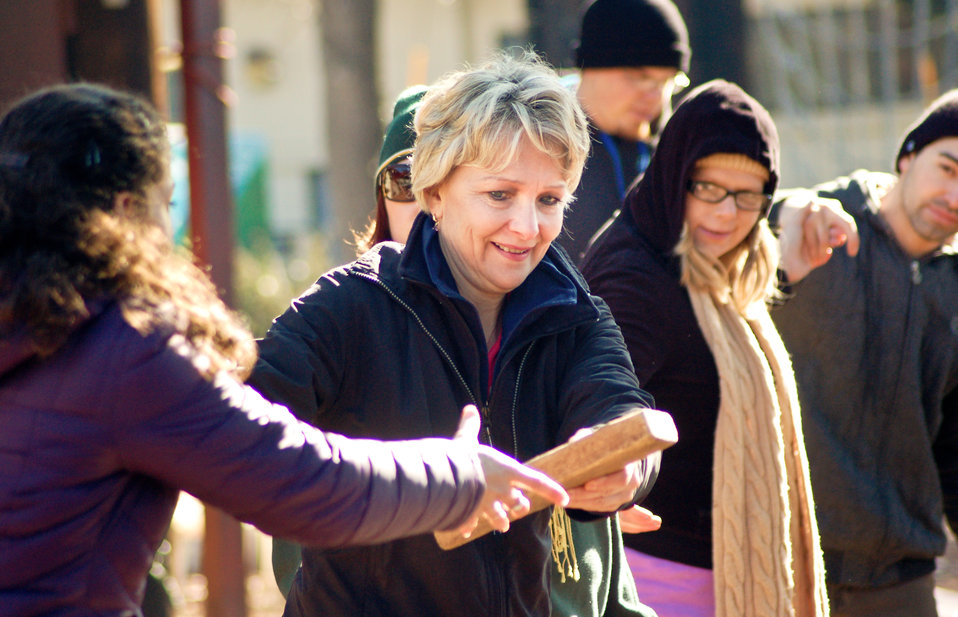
LDP level I ropes course activities

Susan McLaughlin, a mechanical engineer for the U.S. Army Corps of Engineers Sacramento District, participates in ropes course activities at California State University-Sacramento, Jan. 16, 2013, as part of the district’s leadership development program.
The program is designed to introduce participants to the Army’s expertise in developing skilled, tested and character-based leaders at all levels and across all functional levels.